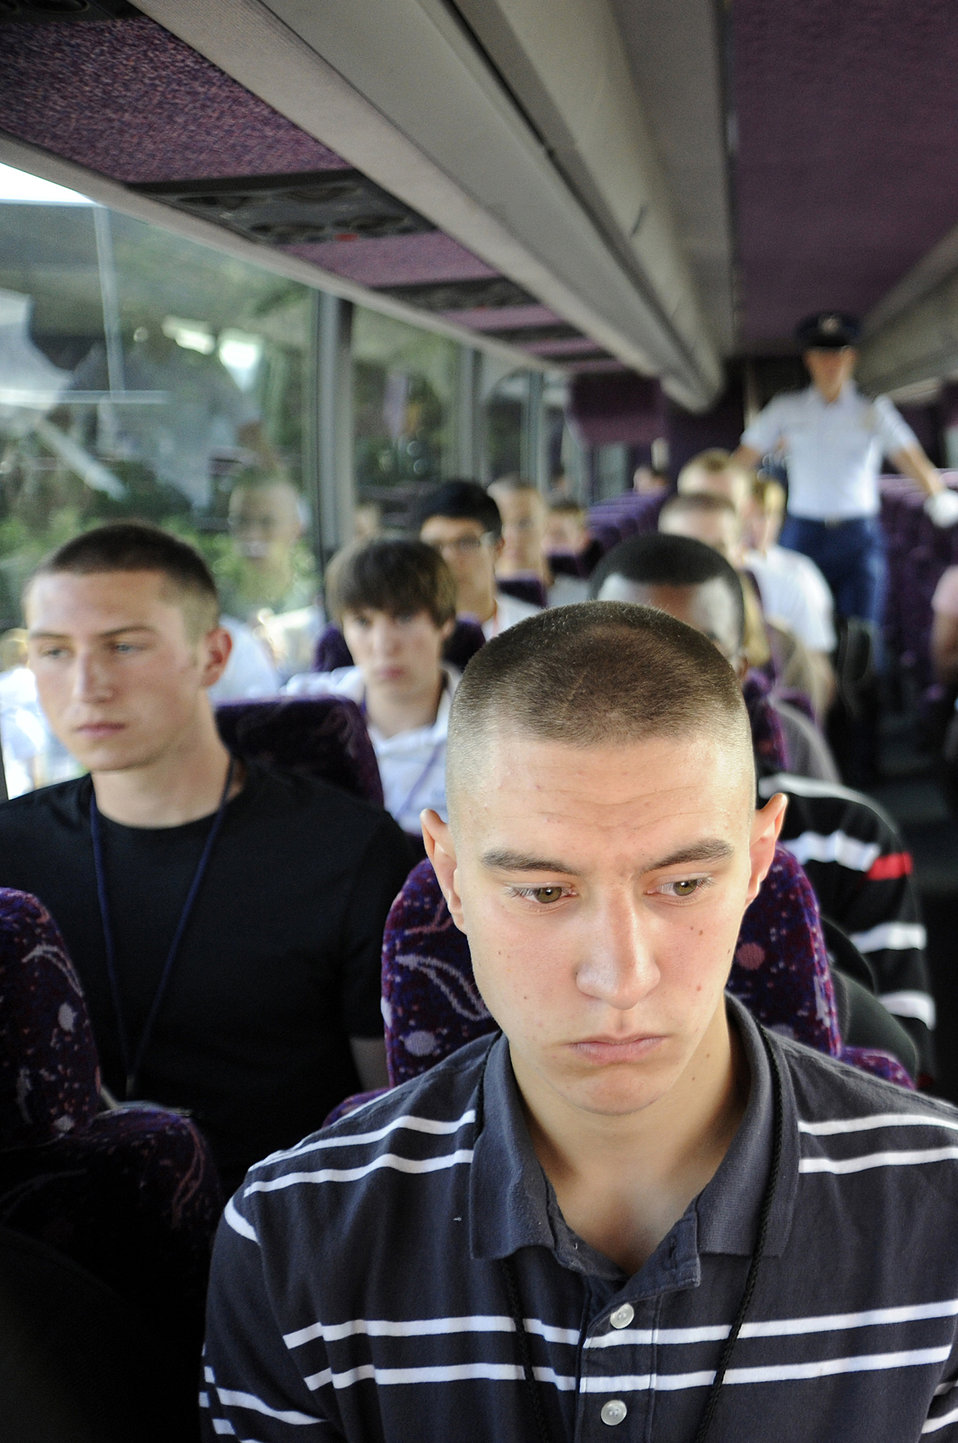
Welcome to the Air Force Academy!

Basic cadets ride in a bus from Doolittle Hall to the cadet area at the U.S. Air Force Academy during cadet inprocessing at the U.S. Air Force Academy in Colorado Springs, Colo., June 25. More than 1,300 cadets were accepted to the Class of 2013 out of nearly 10,000 applicants.